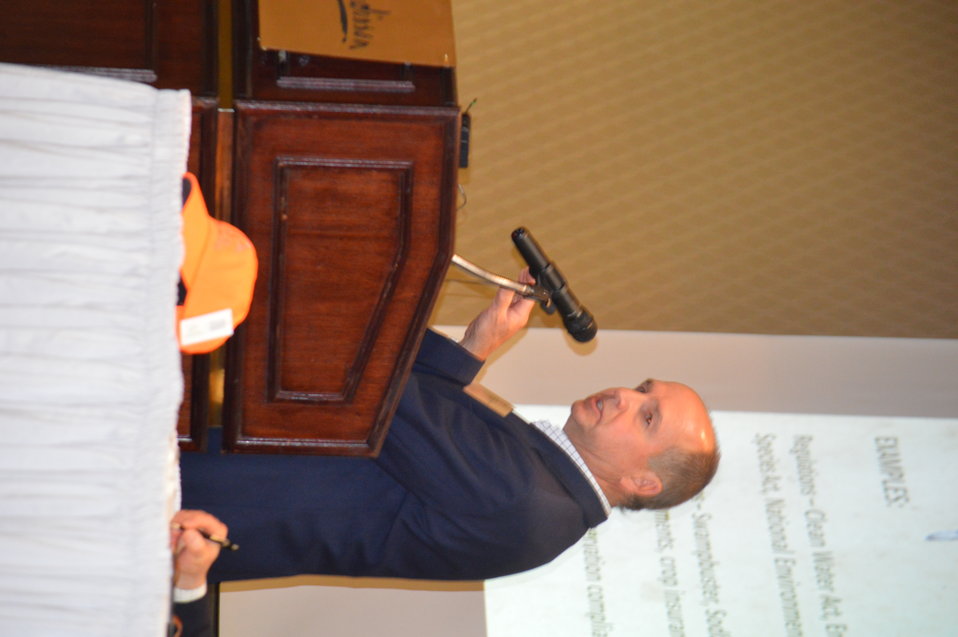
Jim Ringelman from Ducks Unlimited speaks at the Prairie Summit about Disincentives and Regulations.